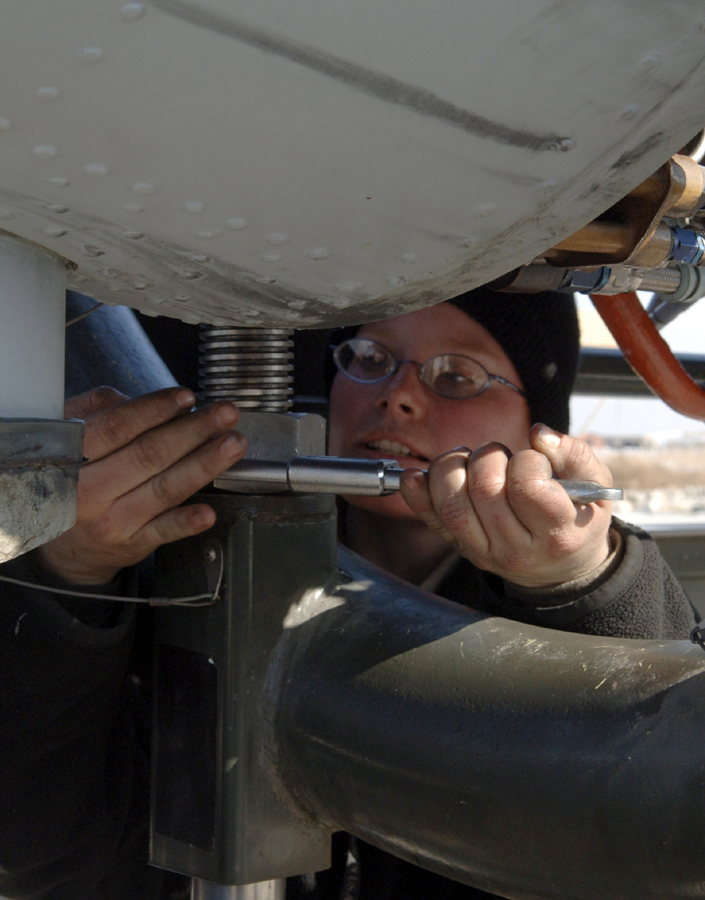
Engine check

BAGRAM AIR BASE, Afghanistan (AFPN) -- Staff Sgt. Julie Jewett makes adjustments with a wrench while preparing to replace an engine from an A-10 Thunderbolt II. Sergeant Jewett is an aerospace propulsion craftsman with the 455th Expeditionary Aircraft Maintenance Squadron.